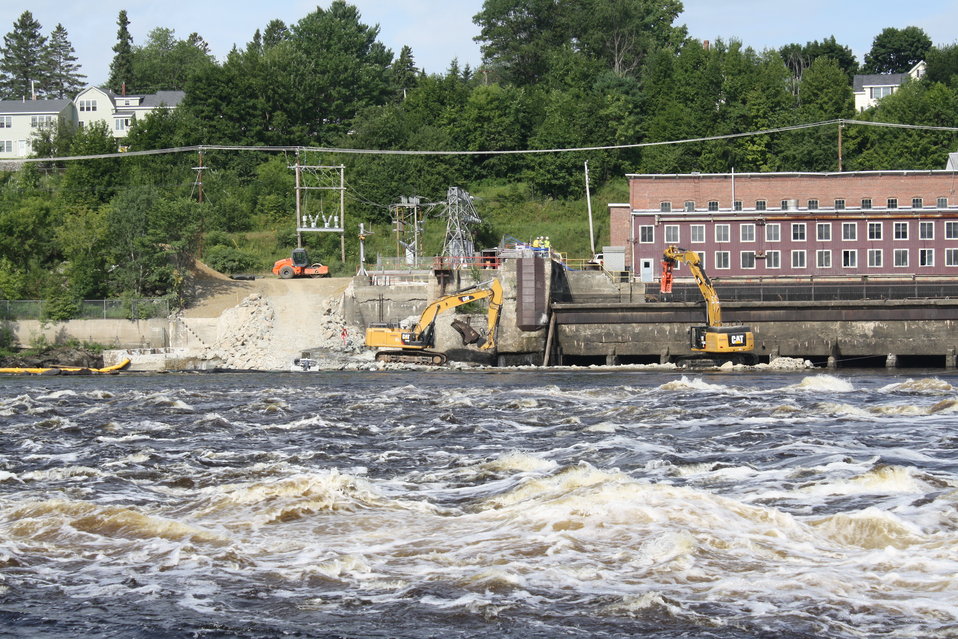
Veazie Dam Removal

Various angles of the excavators prepping for the breaching.